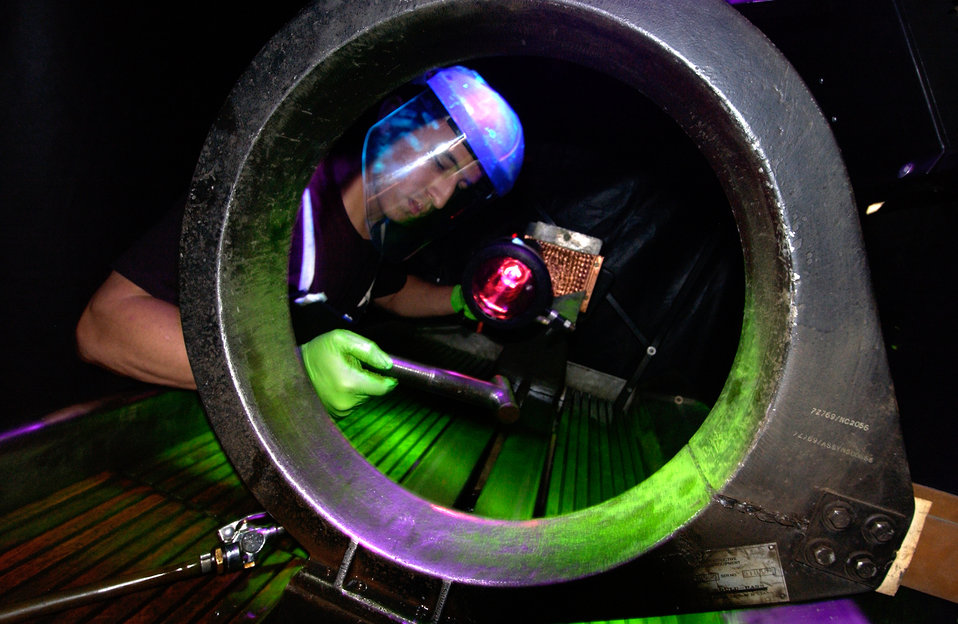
Bolt of color

CHARLESTON AIR FORCE BASE, S.C. -- Airman 1st Class Kenny Payamps uses fluorescent magnetic particle testing to inspect a water separator bolt from a C-17 Globemaster here. Airman Payamps is a nondestructive inspection testing journeyman assigned to the 437th Maintenance Squadron.